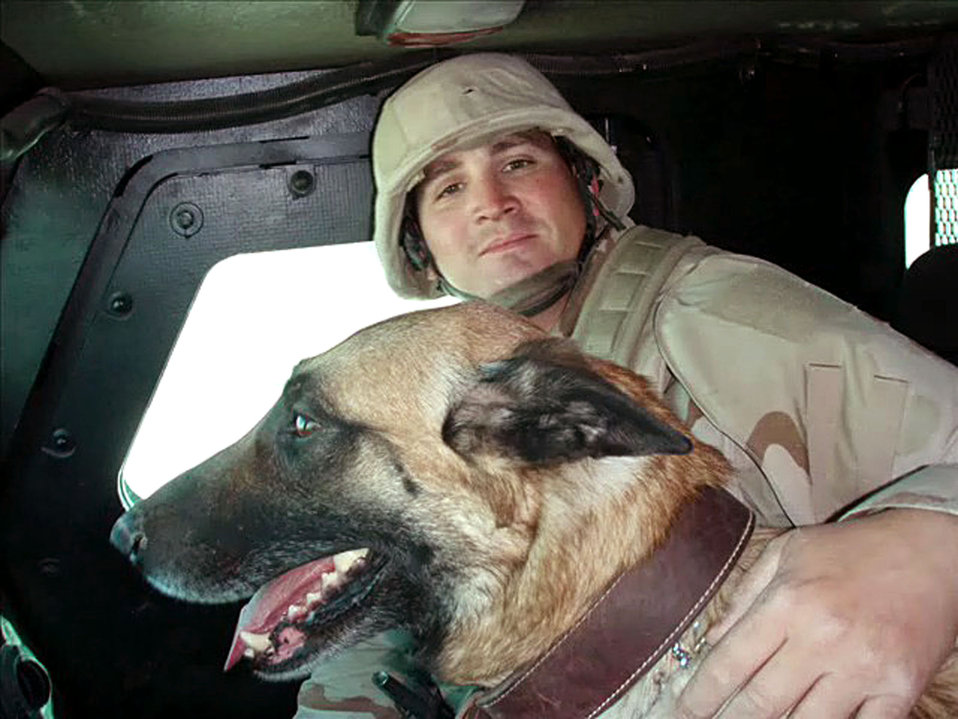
Hill mourns the loss of 3 Airmen

Tech. Sgt. Timothy R. Weiner was an explosive ordnance disposal Airman serving in Iraq and was killed defusing a car bomb when it detonated Jan. 7. He was deployed from the 775th Civil Engineer Squadron at Hill Air Force Base, Utah.